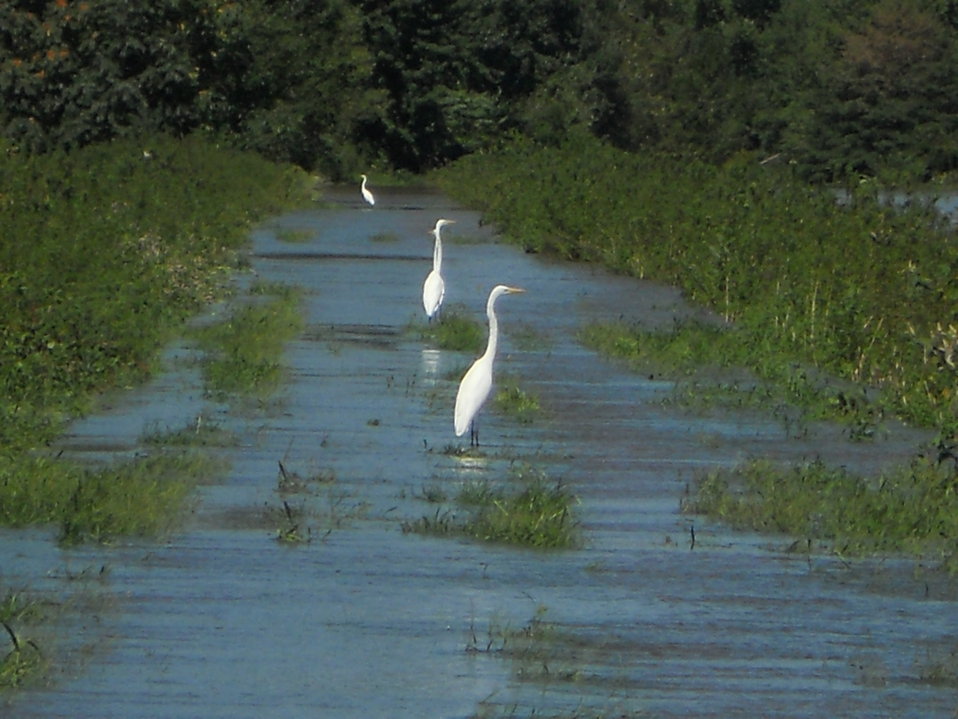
Egrets at Wallkill River Refuge

Wallkill River National Wildlife Refuge, Sussex, N.J. Post-Irene flooded Liberty Loop impoundments and trail. Meagan Racey/USFWS